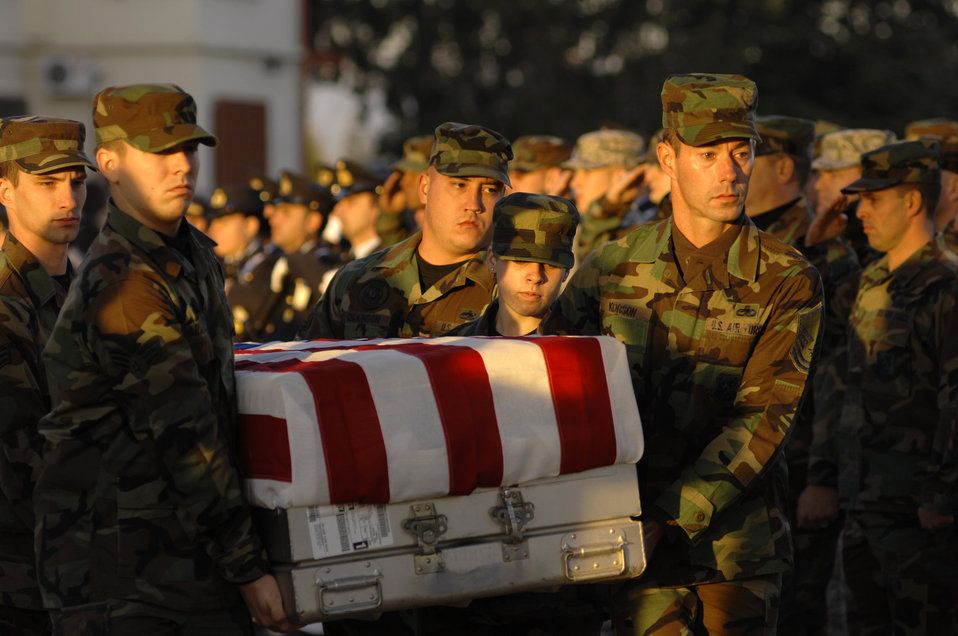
Fallen Airmen, Soldiers honored at Aviano

Airmen from the 31st Fighter Wing carry a fallen Airman onto a C-130 Hercules during a repatriation ceremony Nov. 13 at Aviano Air Base, Italy, for six servicemembers who were killed when an Army UH-60 Black Hawk helicopter attached to the 1st Battalion, 214th Aviation Regiment crashed Nov. 8, 22 miles southwest of Aviano, Italy.